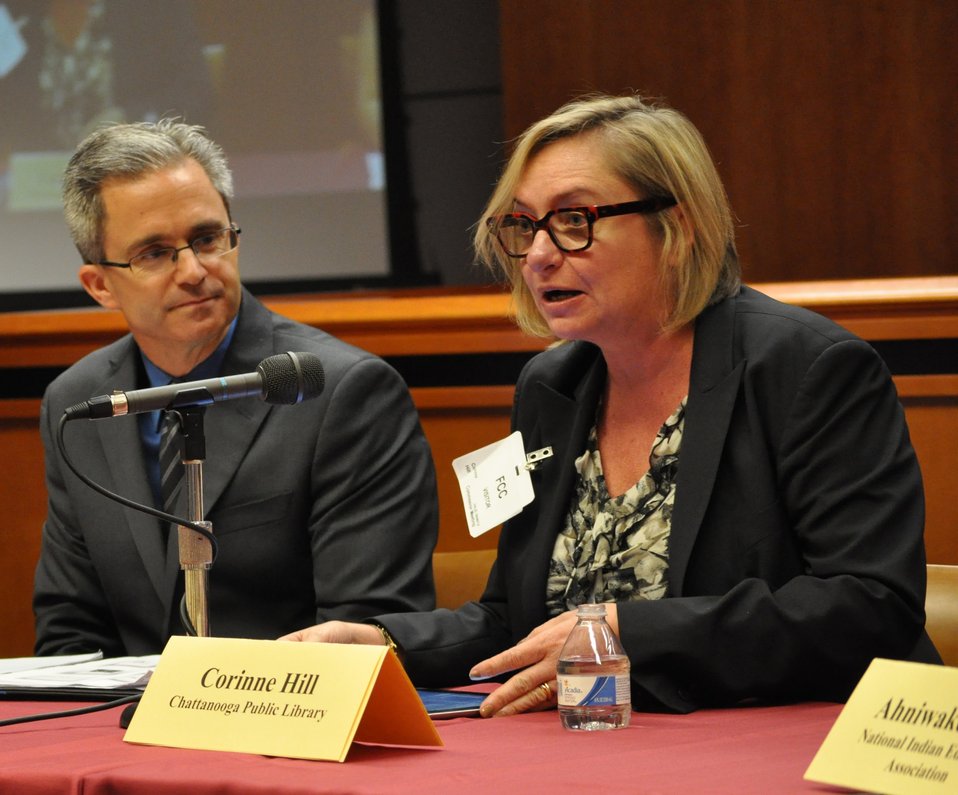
5.6.2014 E-Rate Modernization Workshop

Panel Discussion: Expanding Access to Wi-Fi for Schools and Libraries